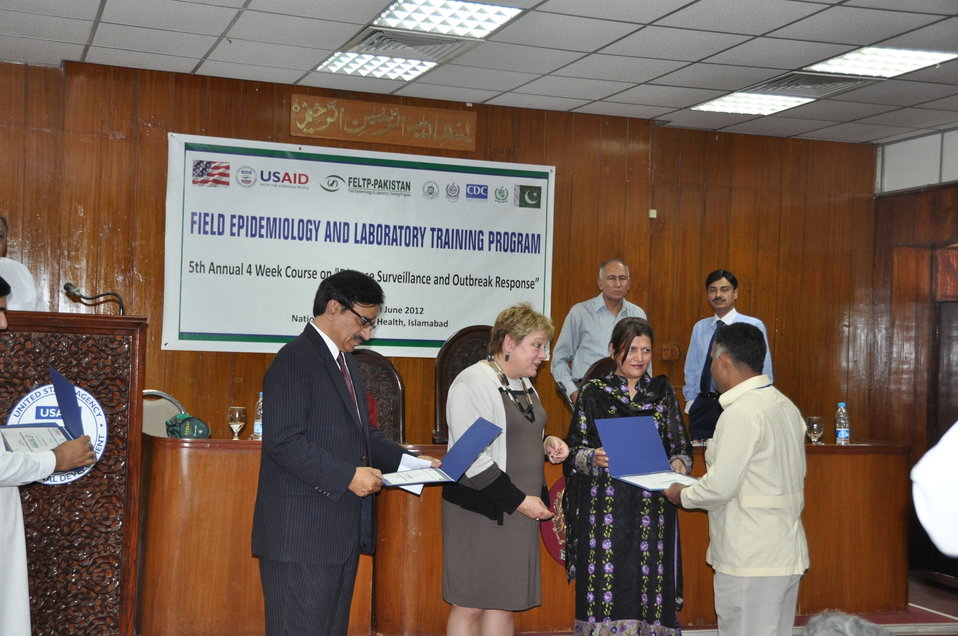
Field Epidemology and Laboratory Training Program